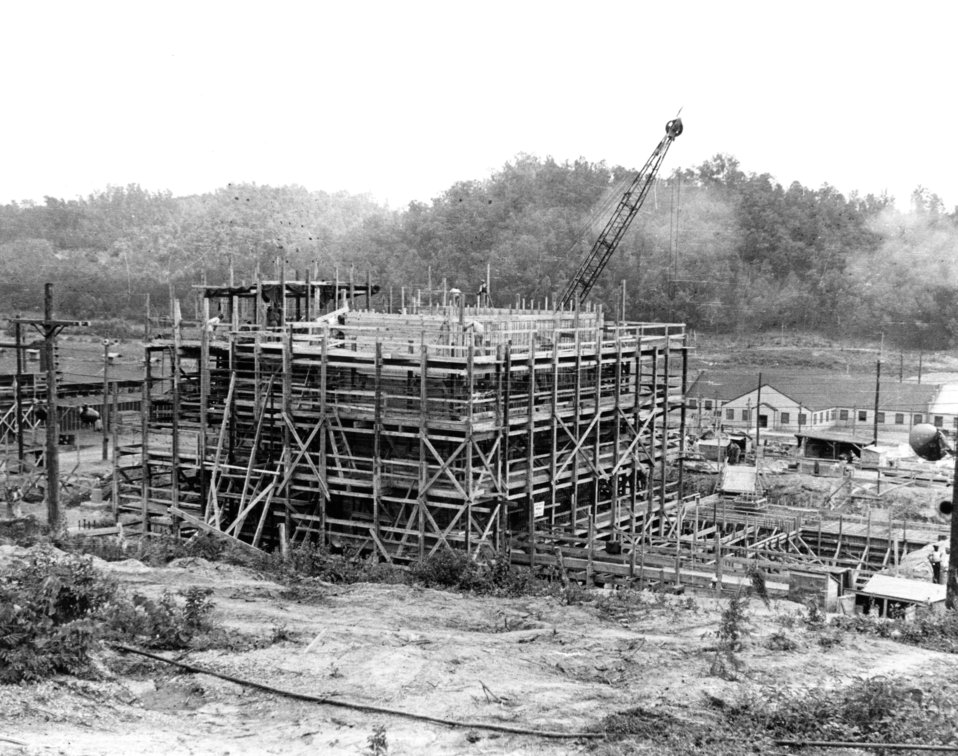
Construction activity at Oak Ridge